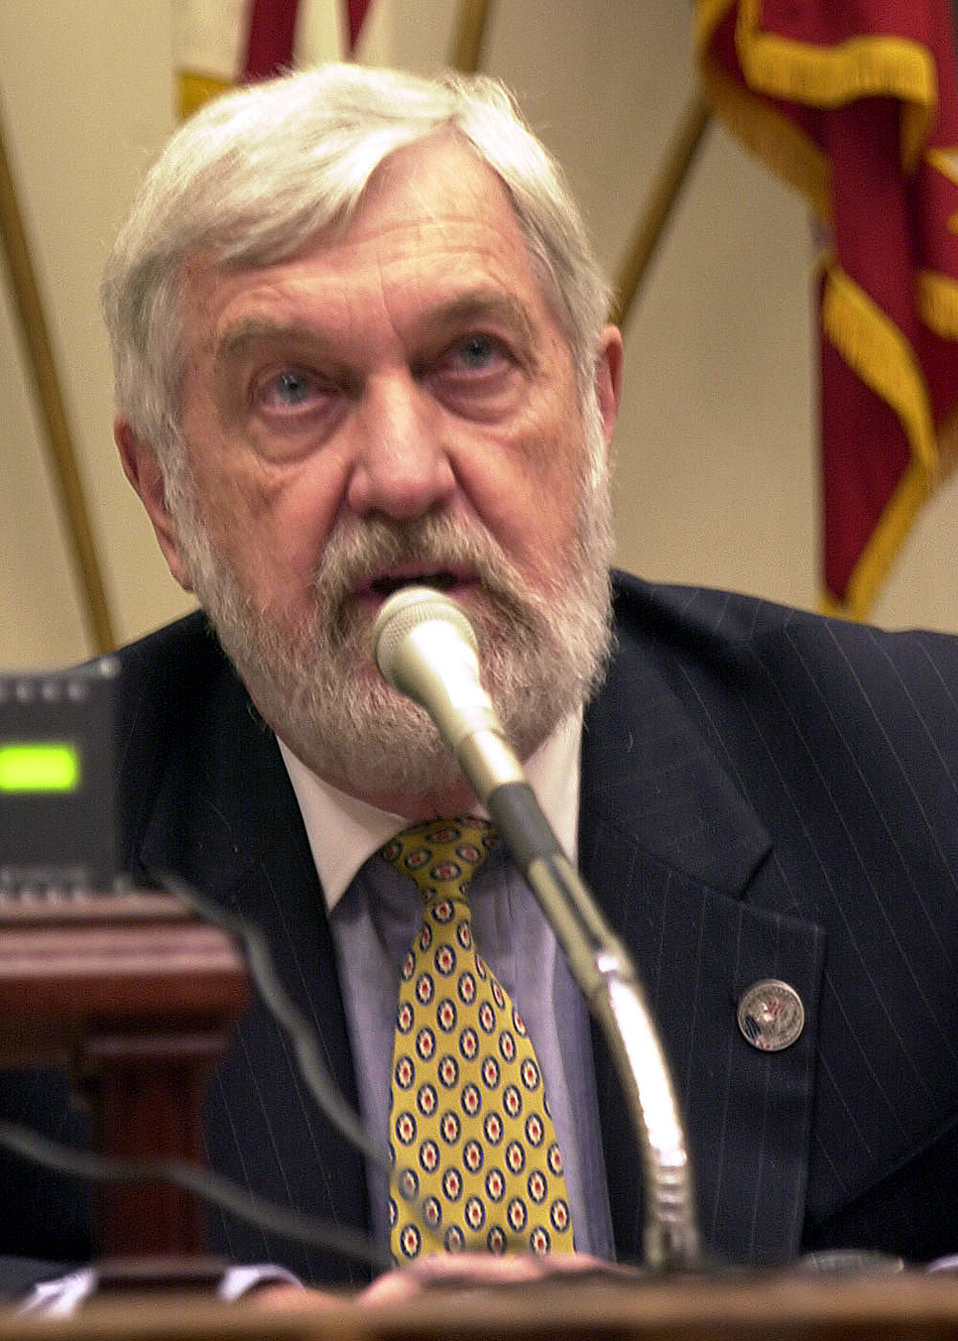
Gibbs

WASHINGTON -- Nelson F. Gibbs, assistant secretary of the Air Force for installations, environment and logistics, testified before congress March 20 concerning the Air Force's construction portion of the 2004 National Defense Authorization Act budget request. Also discussed at the testimony were Air Force dormitories, child care facilities and base realignment and closure.